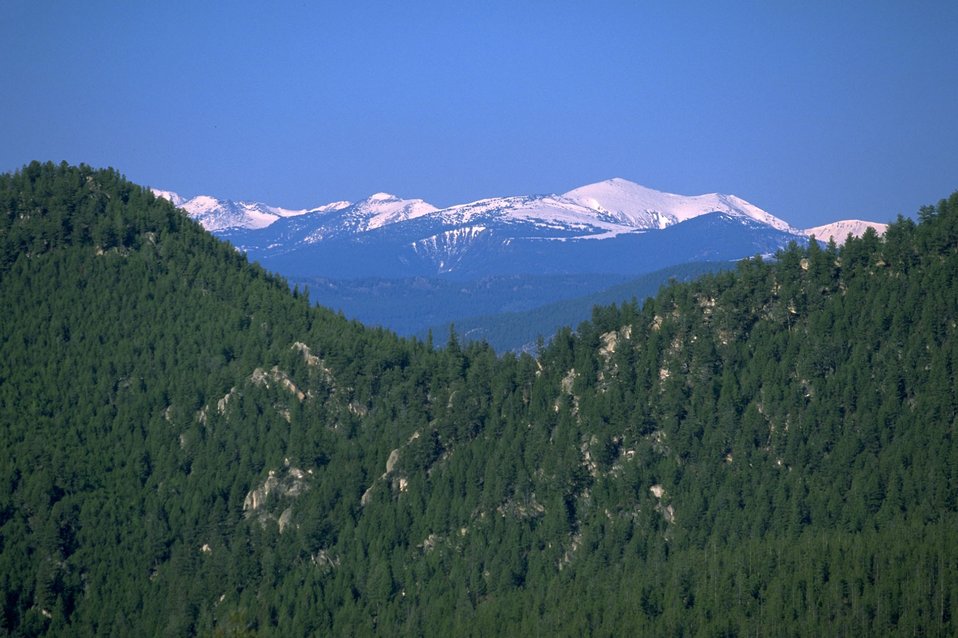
Snow-capped mountains centered between forested hillsides